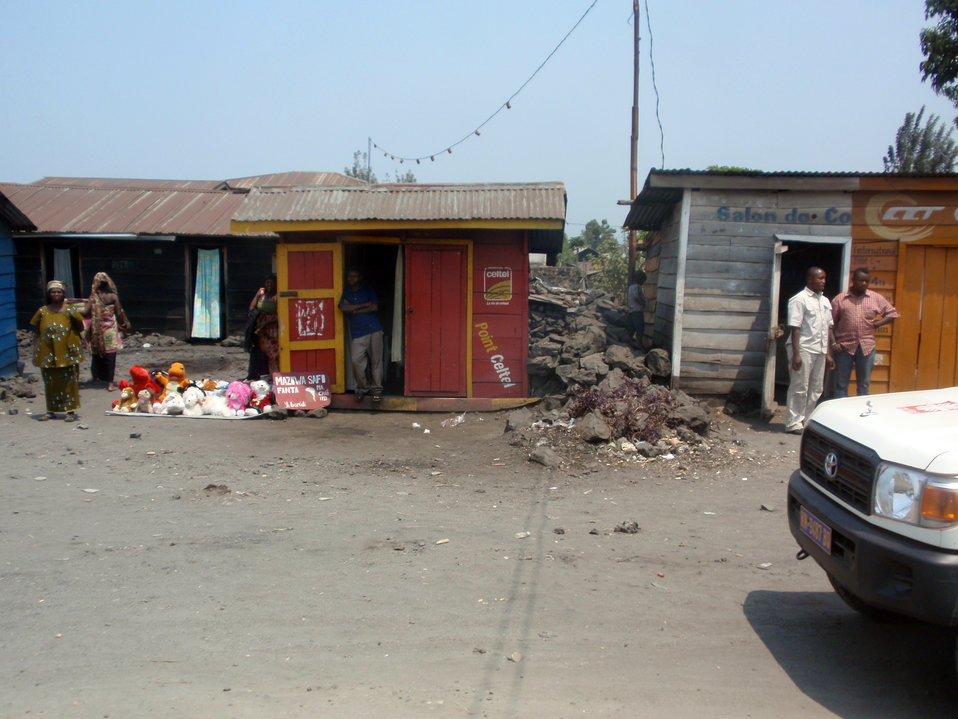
Behind the Scenes: Arrival in Kinshasa

The scene entering Kinshasa from the airport in Kinshasa, Democratic Repbulic of Congo August 10, 2009.